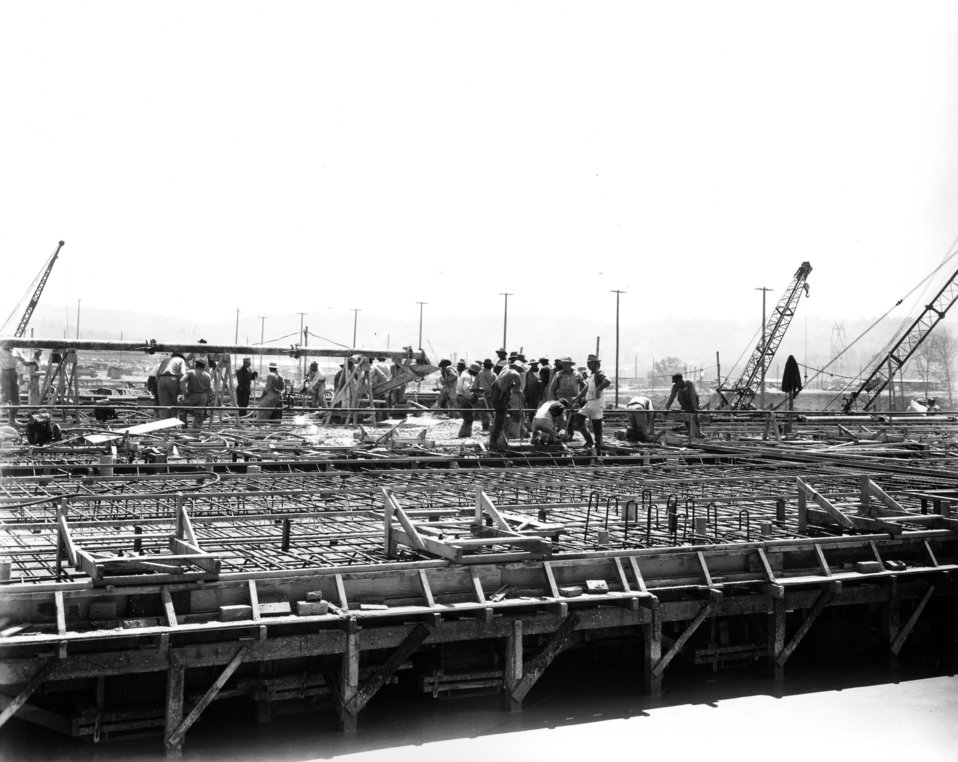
K-27 at Oak Ridge